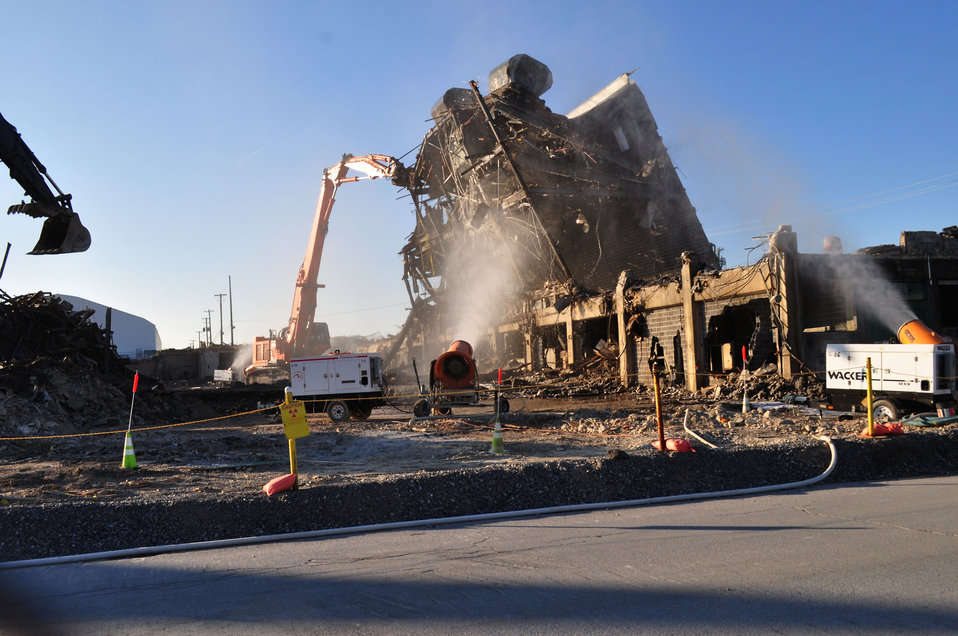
DandD of K-25 North Tower

13-005 DOE photo Lynn Freeny 1-23-2013 ETTP North Tower K-25 Oak Ridge Tennessee